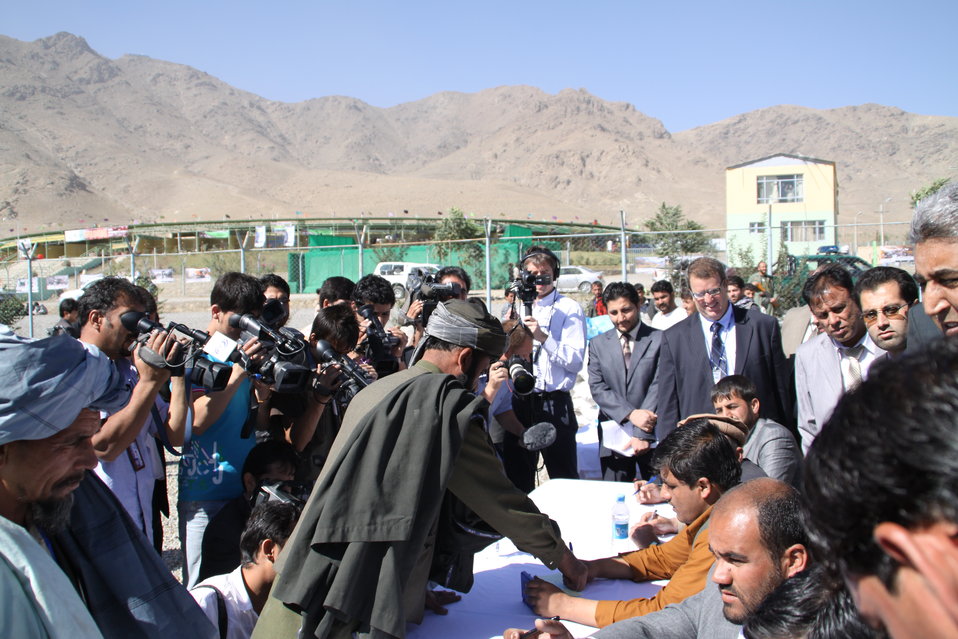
AVIPA Plus Wheat Seed Distribution 101005

US Ambassador Karl Eikenberry and USAID Acting Mission Director Kevin Brownawell joined the Minister of Agriculture, Irrigation and Livestock, H.E. Minister Mohammed Rahimi in signing a Memorandum of Understanding and distributing vouchers to area farmers for wheat and fertilizer.

US Ambassador Karl Eikenberry and USAID Acting Mission Director Kevin Brownawell joined the Minister of Agriculture, Irrigation and Livestock, H.E. Minister Mohammed Rahimi in signing a Memorandum of Understanding and distributing vouchers to area farmers for wheat and fertilizer.